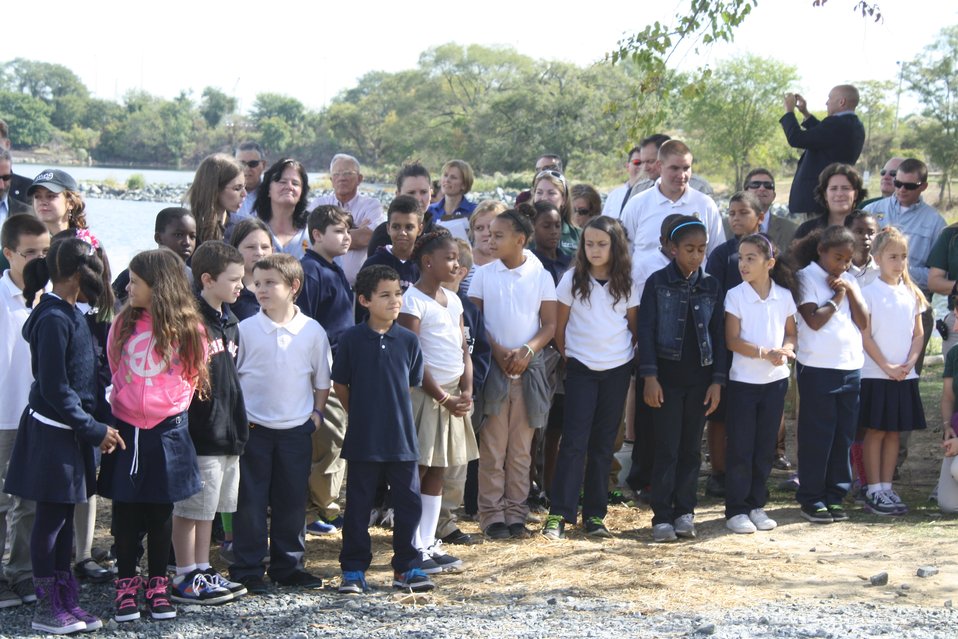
School students

Students from Curtis Bay Elementary School at the Masonville Cove designation ceremony.